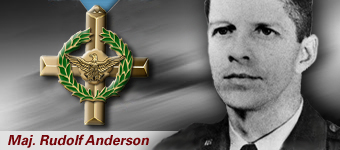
Maj. Rudolf Anderson, Jr., history spotlight graphic, U.S.